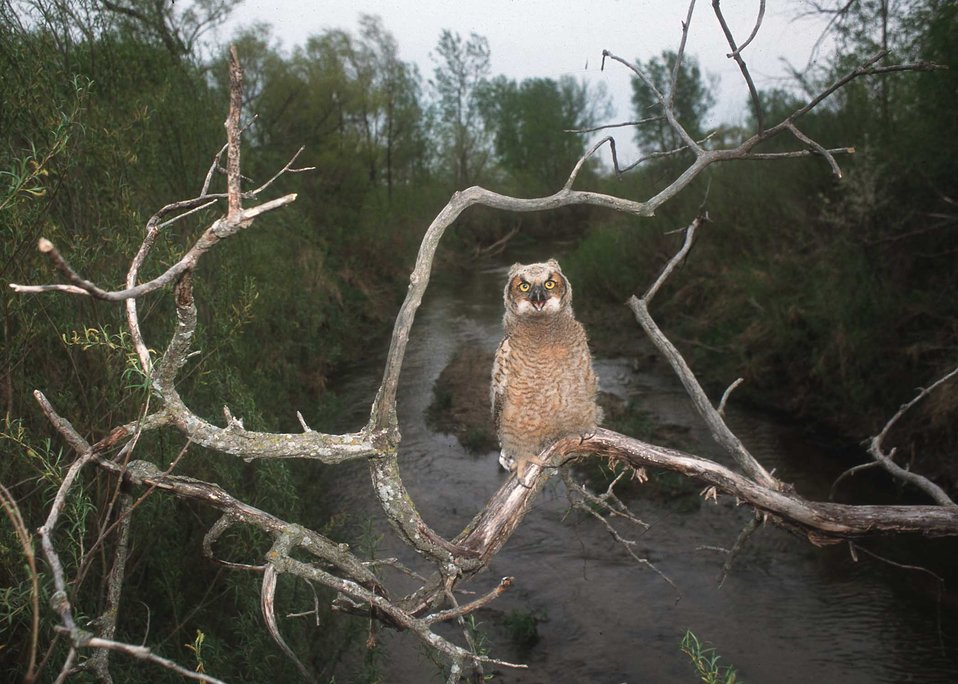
Great horned owl perches above Bear Creek in central Iowa. A riparian forest buffer has been planted in the area for more than 10 years.